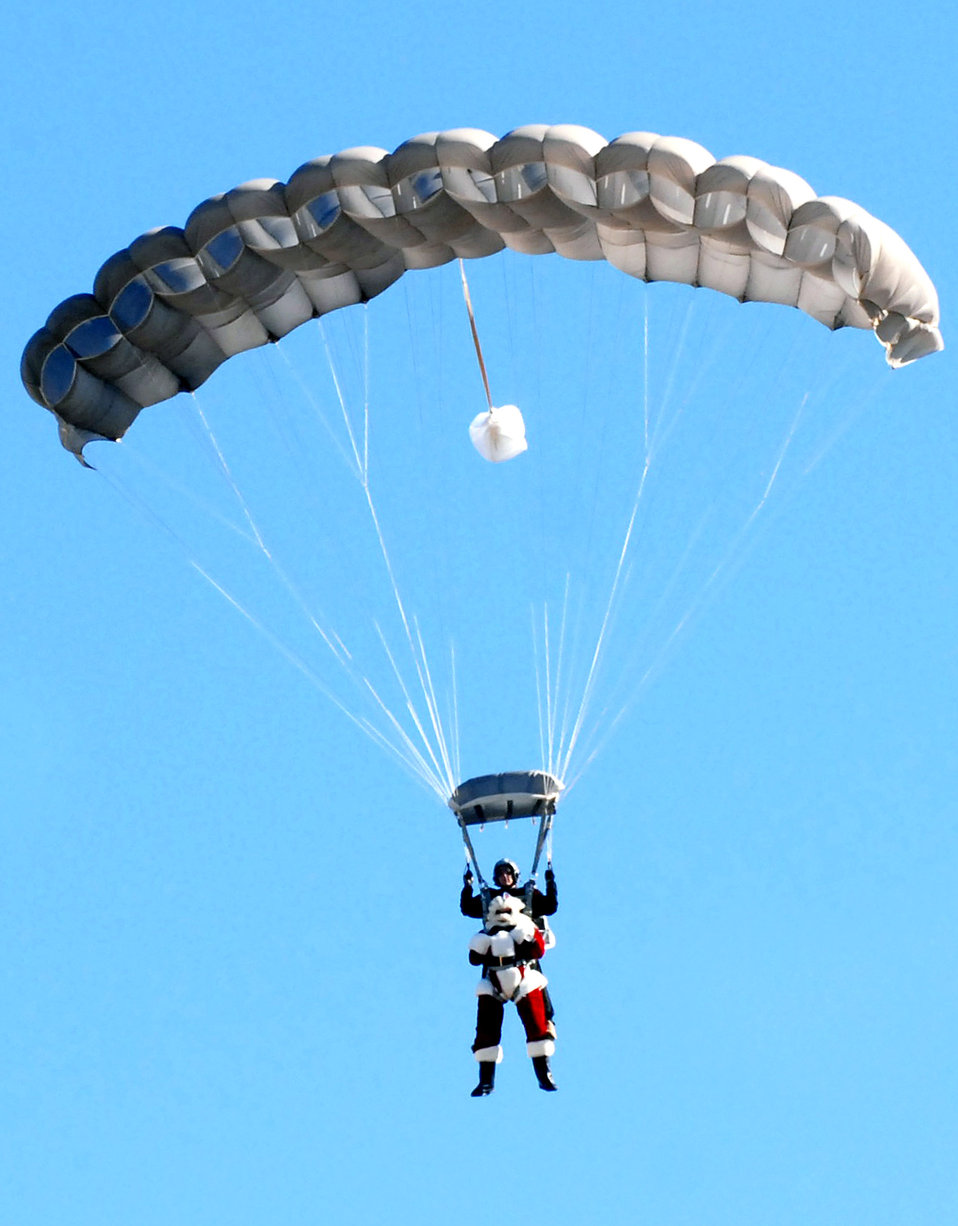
Lackland, Texas join forces for safety

Santa Claus skydives onto the 37th Training Wing parade field to help the Texas Department of Transportation kick off its annual four-week drunk driving prevention campaign Dec. 4 at Lackland Air Force Base, Texas. This is the 10th year of the holiday public education campaign.